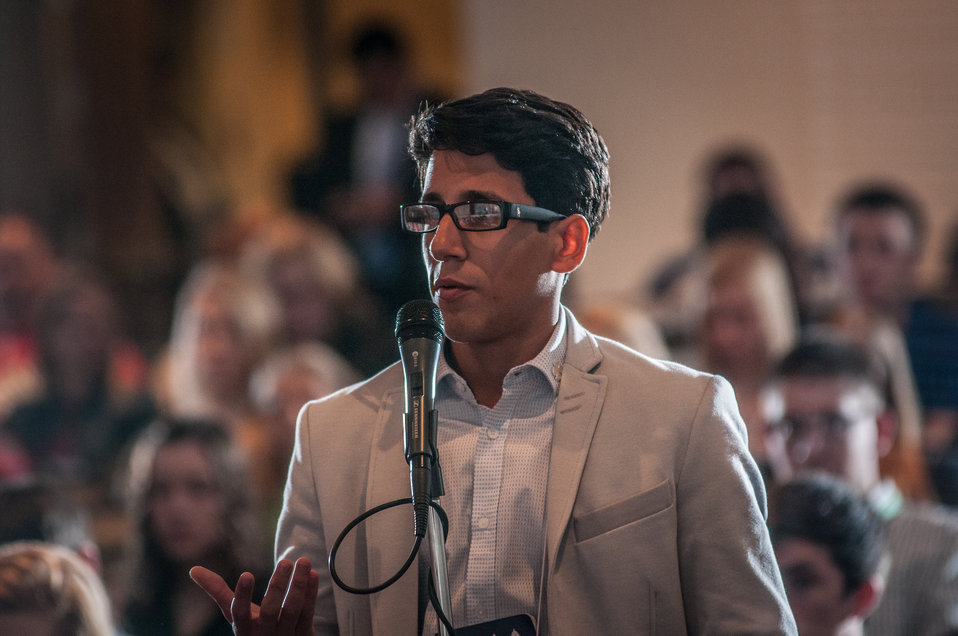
A 4-H youth delegate from Puerto Rico, poses a question to U.S. Department of Agriculture (USDA) Departmental Management Office of Advocacy and Outreach Director Carolyn Parker, about what can be done regarding the food pirces and food security on the island of Puerto Rico, during a question and answer session of the 2013 National 4-H Conference, on Monday, April 8, 2013 in Chevy Chase, MD. The youth delegates are in grades 10-12 (15-19 years old). The purpose of the conference is to 1) engage 4-H youth in personal development experiences that will increase knowledge, resources, and skills; 2) discuss topics affecting youth and 4-H programming nationwide; and 3) empower and mobilize 4-H youth to create positive social change in their communities in a meaningful and genuine way. The conference also reinforces the rich history of 4-H and its valuable tie to USDA, Cooperative Extension and the Land-Grant University System.